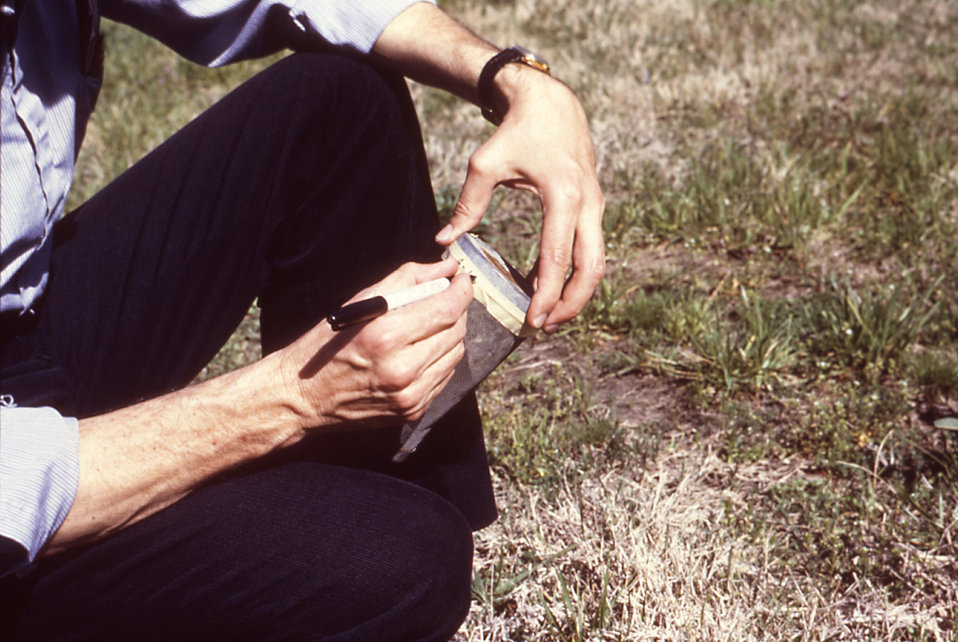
This 1981 photograph depicted a field technician as he labeled a bioassay cage that had been placed in an environment undergoing an insecticidal bioassay study.